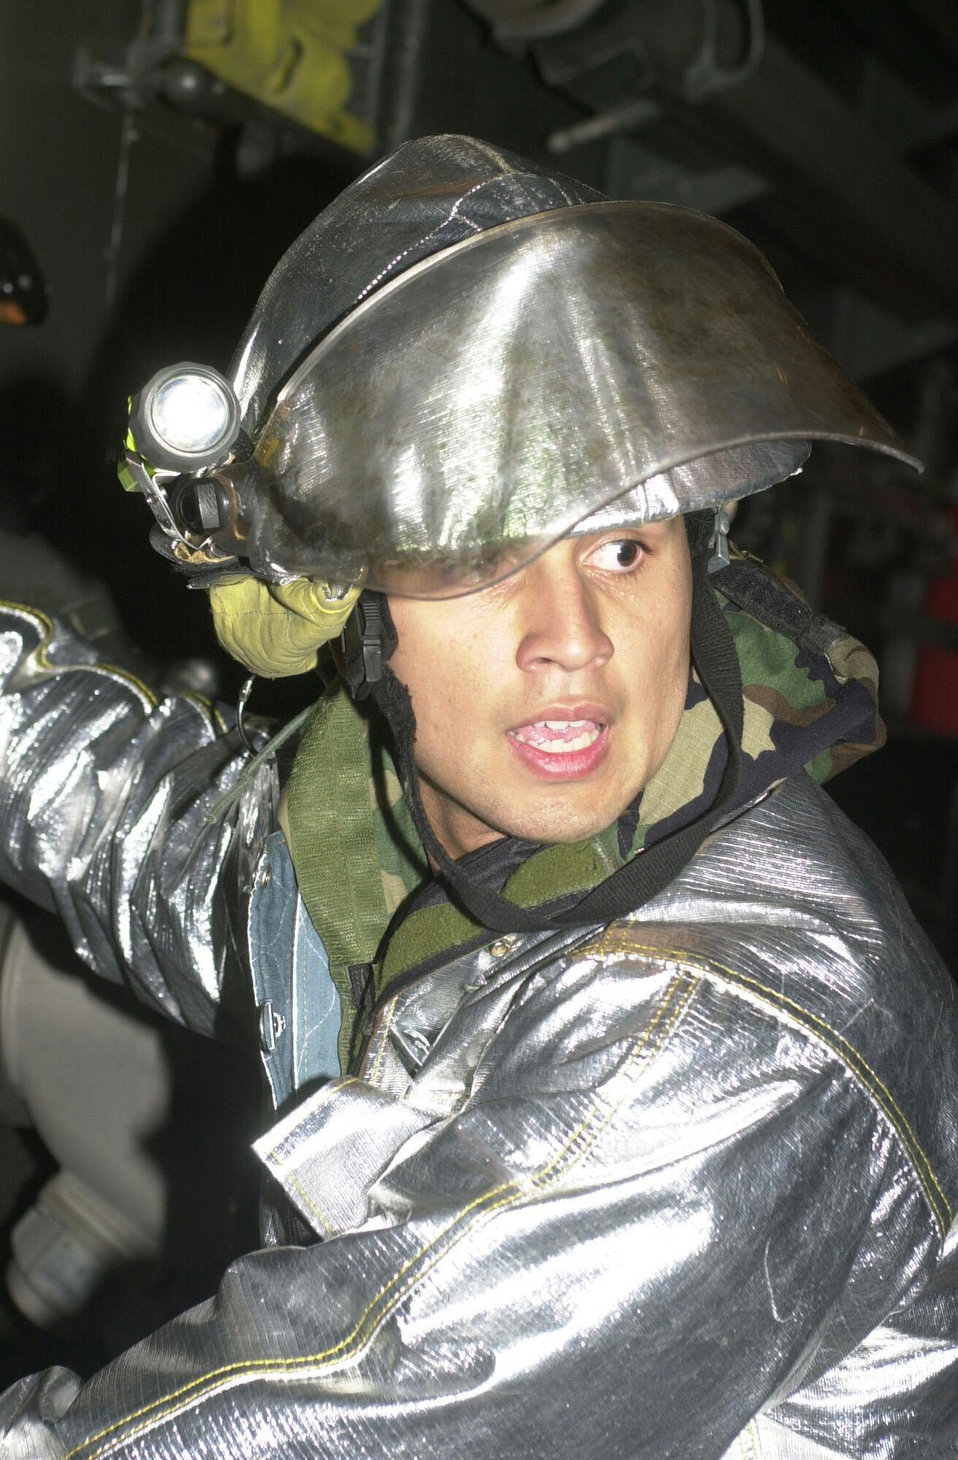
The main man

OSAN AIR BASE, South Korea -- Senior Airman Charlie Franklin attends to the water main on a fire truck during an exercise's simulated building fire here recently. Airman Franklin is assigned to the 51st Civil Engineer Squadron.